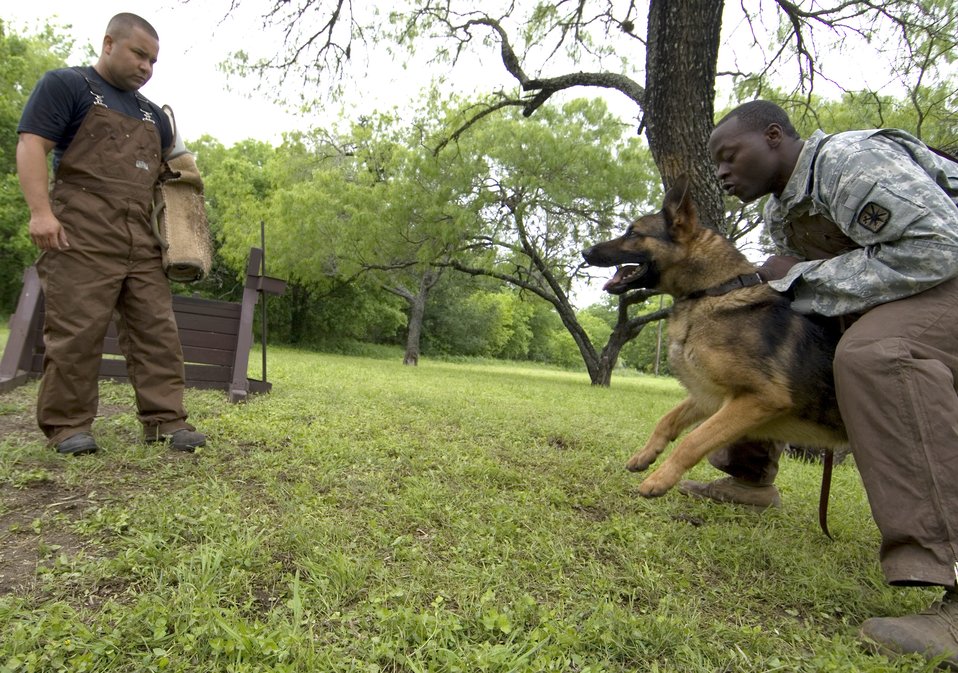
Canine Boot Camp: Instructors bark orders, recruits respond in kind

Staff Sgt. Adolph Rodriguez and Army Sgt. Brodrick Kimble work together to teach a dog to attack and release on command. Military working dog training at Lackland Air Force Base, Texas, is a Department of Defense program, and all services work together to train dogs for patrol and bomb/drug detection in the field.